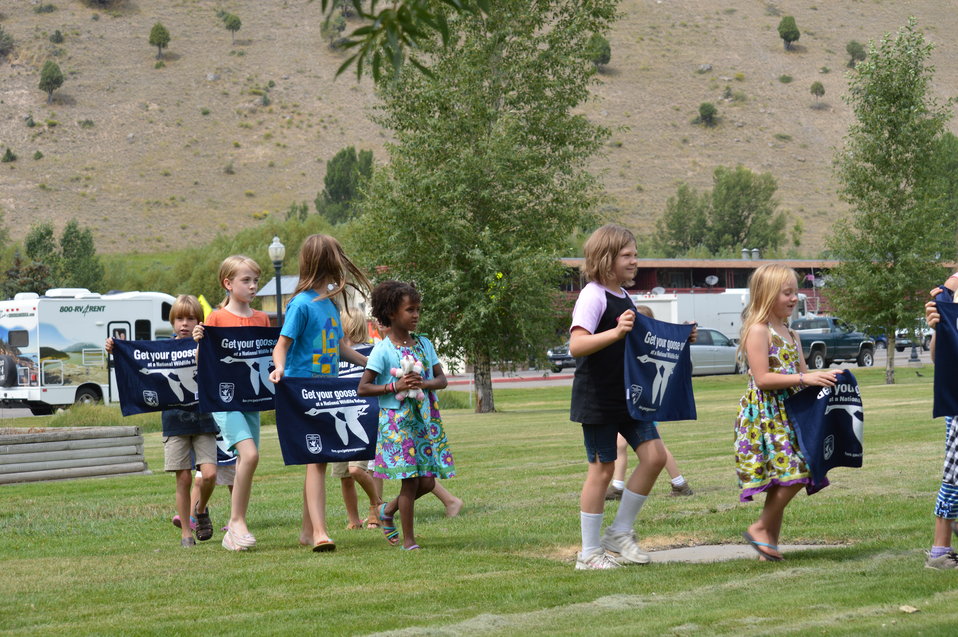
Get Your Goose On! - National Elk Refuge Style

On August 10, 2012 the U.S. Fish and Wildlife Service and Partners celebrated the 100 year anniversary of the establishment of the National Elk Refuge. In these photos, young attendees, along with Puddles the Blue Goose and the National Elk Refuge's mascot, showed us how to Get Your Goose On! with style.